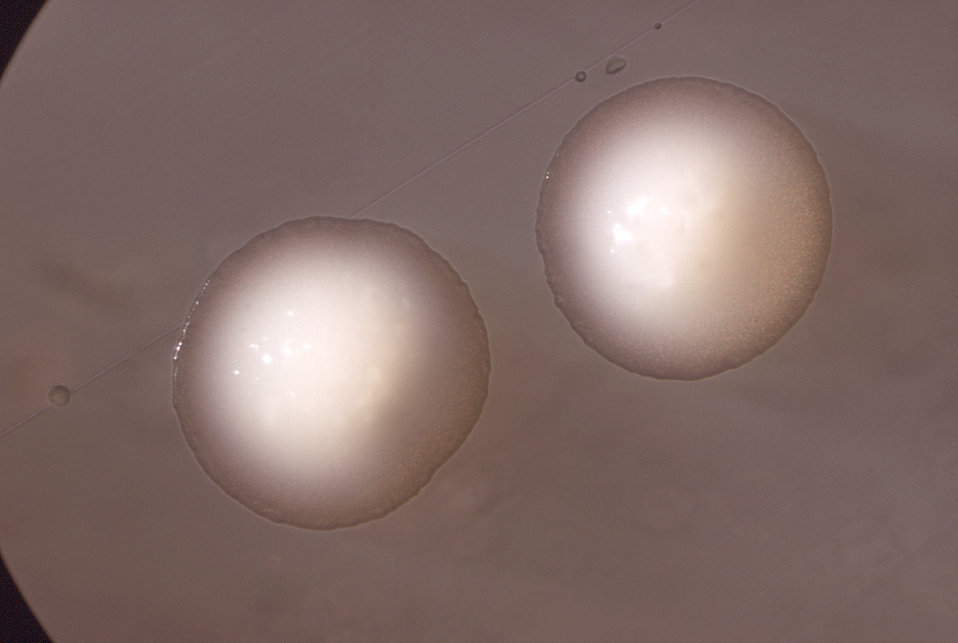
Magnified 15X, this image depicts the morphologic characteristics displayed by two mature Gram-positive, Actinomyces naeslundi bacterial colonies, of the 'smooth' strain, W-1003, which were cultivated on an unknown culture medium.